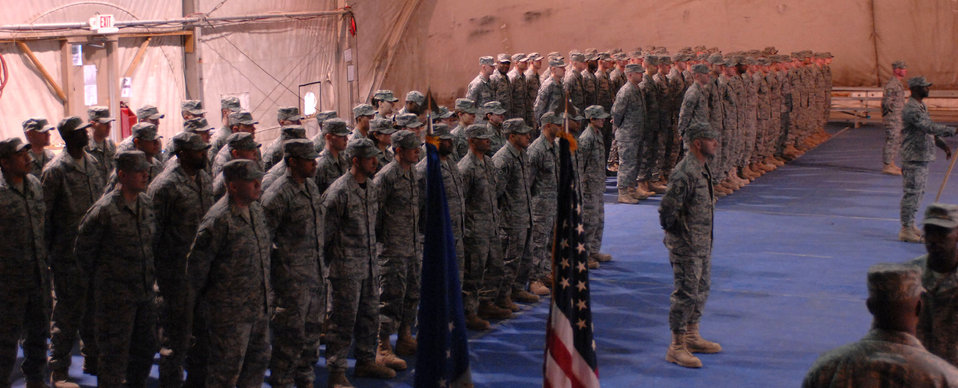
Bagram security forces Airmen pass torch as unit inactivates

Members of the 755th Expeditionary Security Forces Squadron stand together for the last time Jan. 11 at Bagram Air Base, Afghanistan. The squadron, originally formed in May 2006 in response to a Army request for support of its detainee operations mission, was inactivated during a formal ceremony Jan. 11 here.